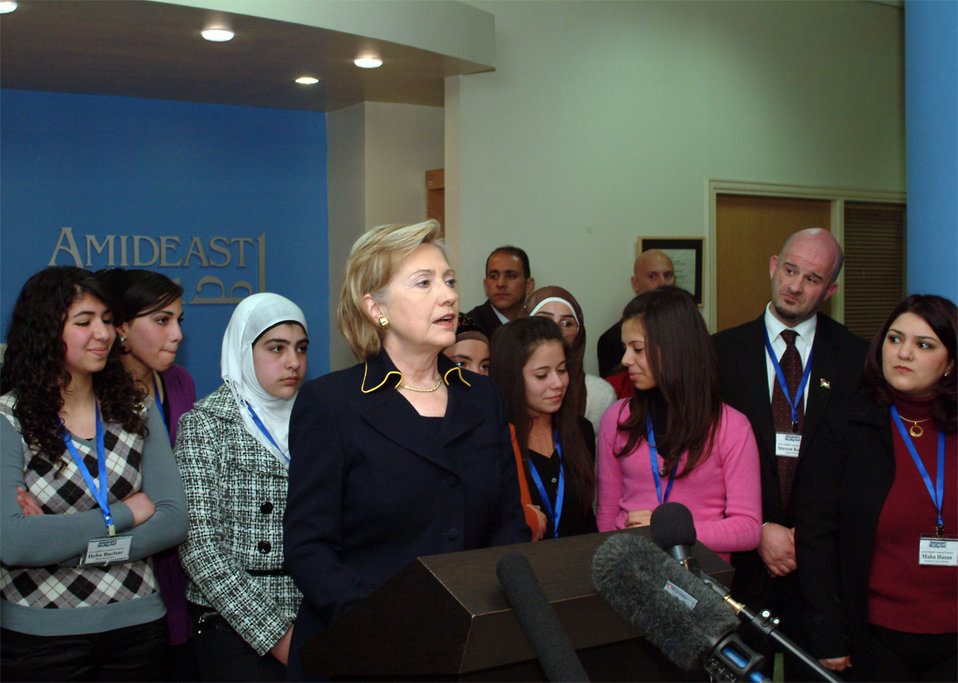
Secretary Clinton at Amideast Event

Secretary Clinton at an Amideast event in Ramallah March 4, 2009.